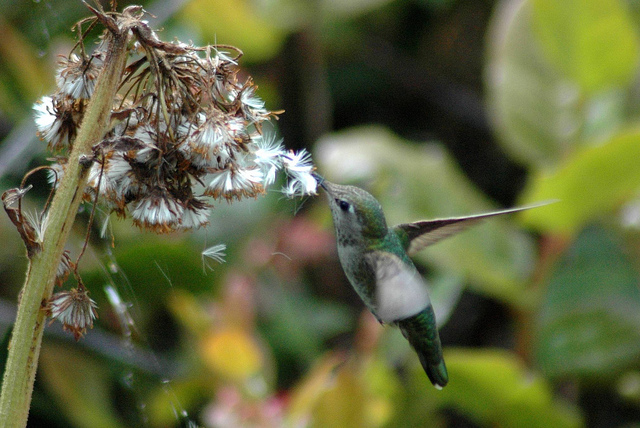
Anna's hummingbird

Bandon Marsh National Wildlife Refuge, MA